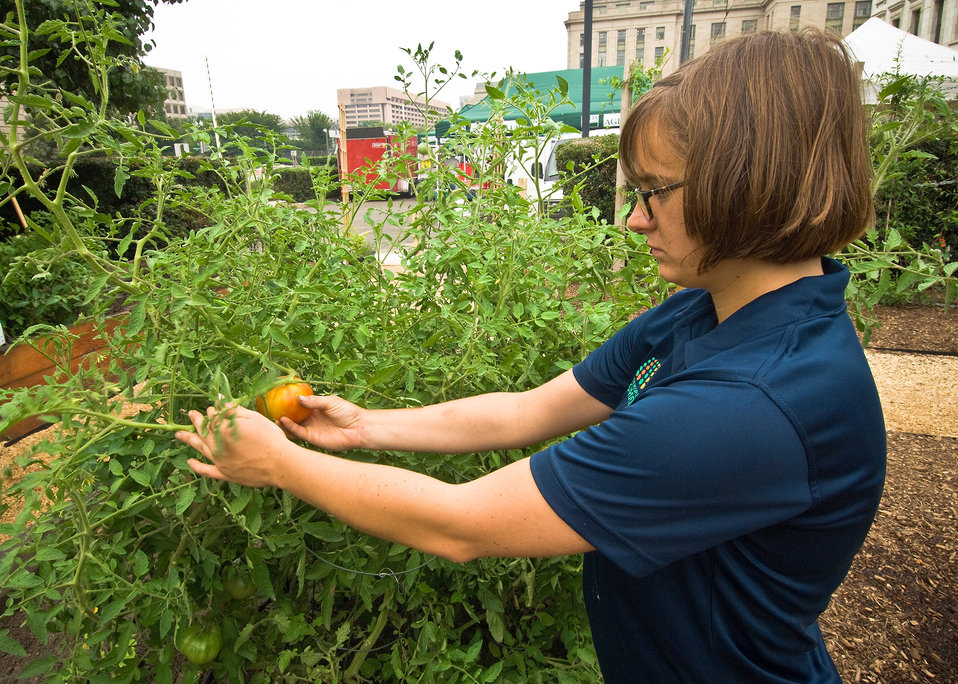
Meredith Kotelec, a University of Maryland intern with the U.S. Department of Agriculture's Office of Operations harvests a ripe tomato, one of the many vegetables grown in The People's Garden planted in the North East corner of USDA. USDA Photo 09di1541-06